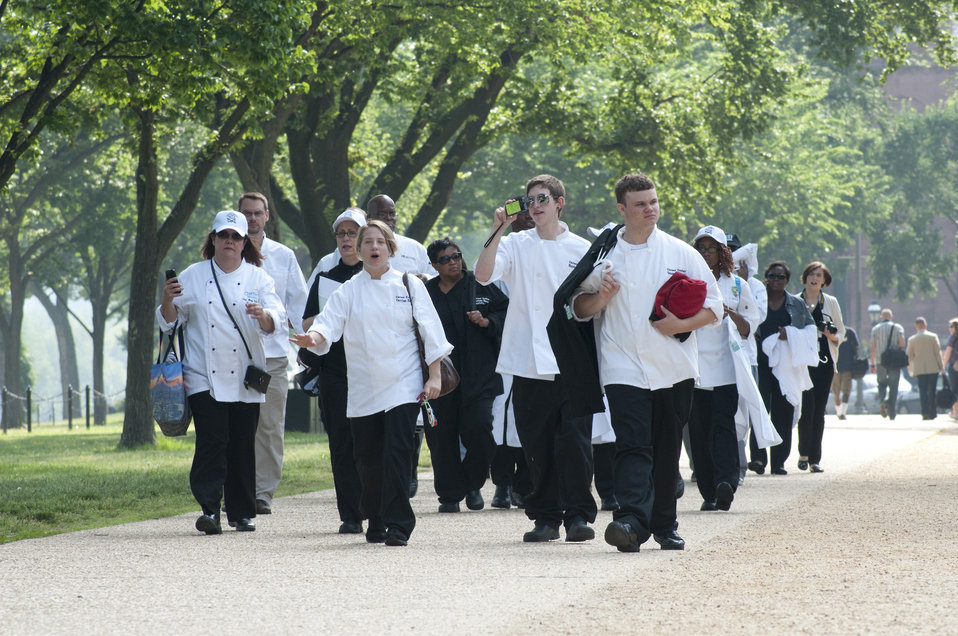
Student chef finalists, walk along The Mall on their way to the U.S. Department of Agriculture for the Cooking Up Change, National Healthy Cooking Competition in Washington, DC, on Monday, May 23, 2011.